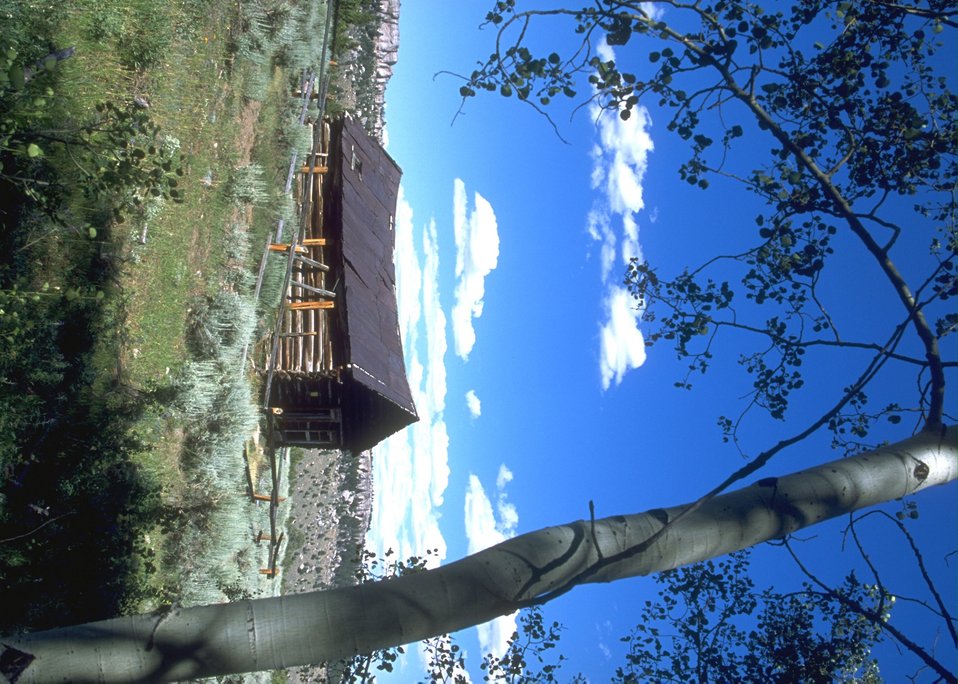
Structures at Miners Delight, Lander Field Office.